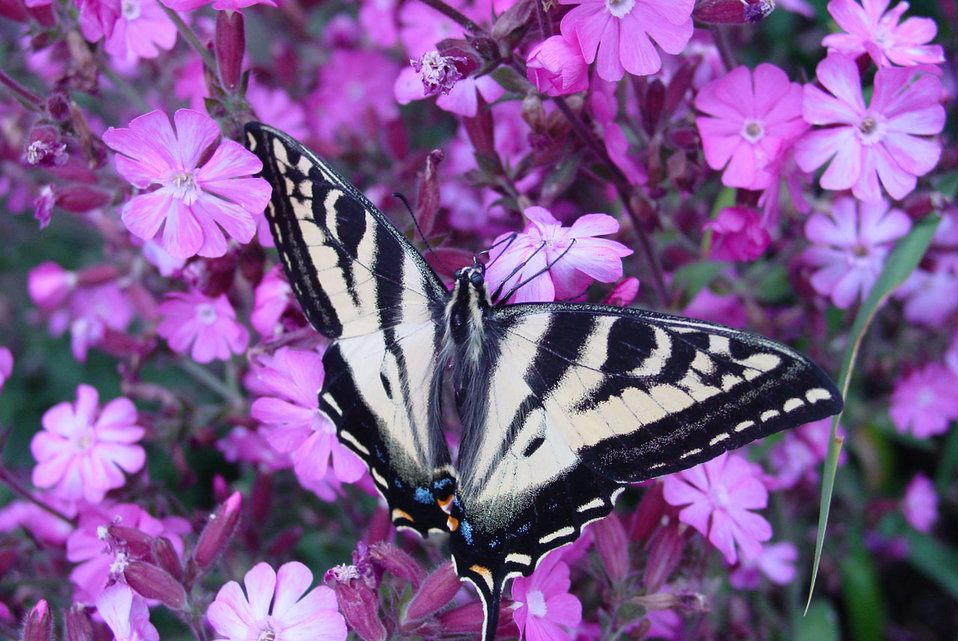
Butterfly flower

Butterfly on flowers.